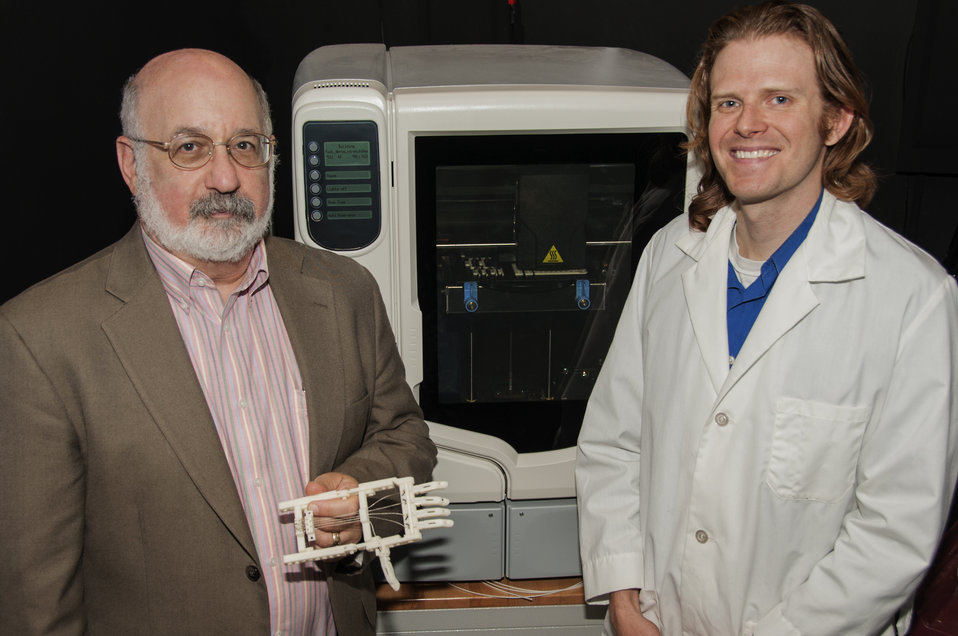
3-D Printing at FDA (8215)

Dr. Steven Pollack (left), Director of FDA’s Office of Science and Engineering Laboratories (OSEL) at FDA’s Center for Devices and Radiological Health (CDRH) holds a 3D-printed RoboHand, a prosthetic for children with amnionic banding syndrome, an illness that can prevent fingers from developing in children. Research engineer James Coburn (right) uses the 3-D printer (background) in his work at FDA.

3-D printing—the process of making a three-dimensional solid object of virtually any shape from a digital model—is spurring innovation in manufacturing, dramatically reducing the time required to design new products and allowing designs to be built that were not possible before. At FDA, we’re using it to expand both our research and our review of new and innovative medical products. To learn more, read this FDA Voice blog post:

• FDA Goes 3-D